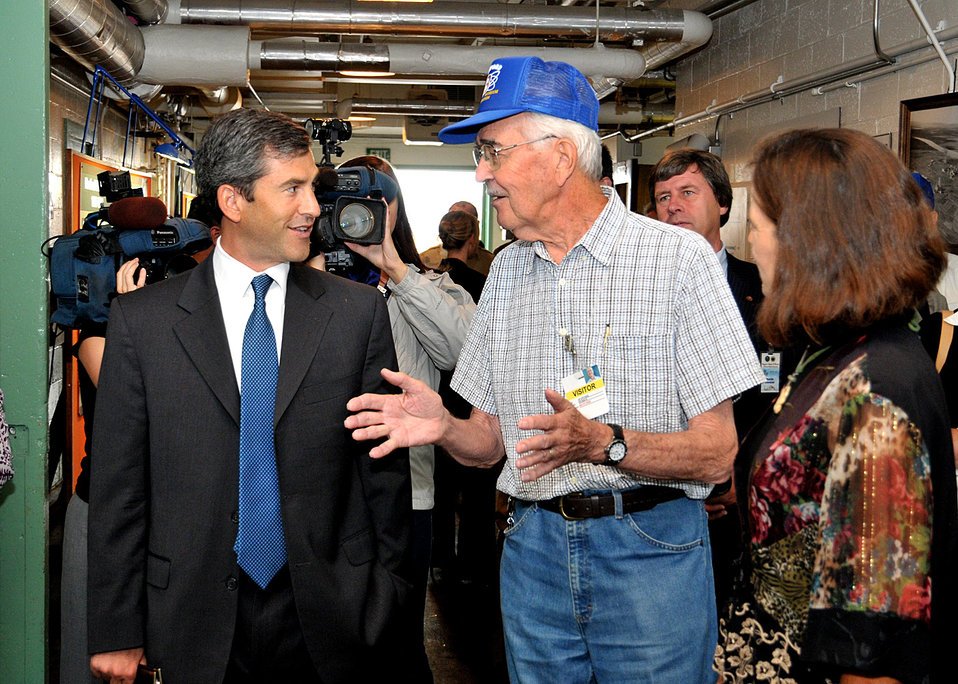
Acting Deputy Secretary Kupfer visits the B-Reactor at Hanford Site. This visit marked the dedication of the world's first industrial-scale nuclear reactor as a national historical landmark.